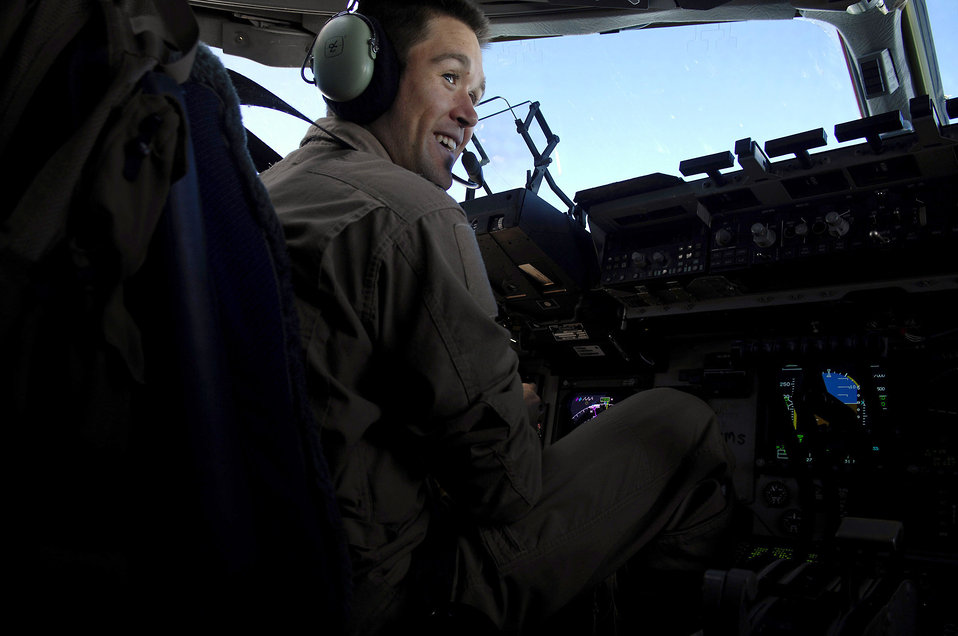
Afghanistan airdrop

Capt. Erik Rathke talks to his co-pilot prior to the delivery of 40 bundles using the Joint Precision Airdrop Delivery System of humanitarian supplies to a drop zone April 13 in Afghanistan. Captain Rathke is a pilot from the 17th Airlift Squadron from Charleston Air Force Base, S.C., and is deployed to the 816th Expeditionary Airlift Squadron in Southwest Asia.